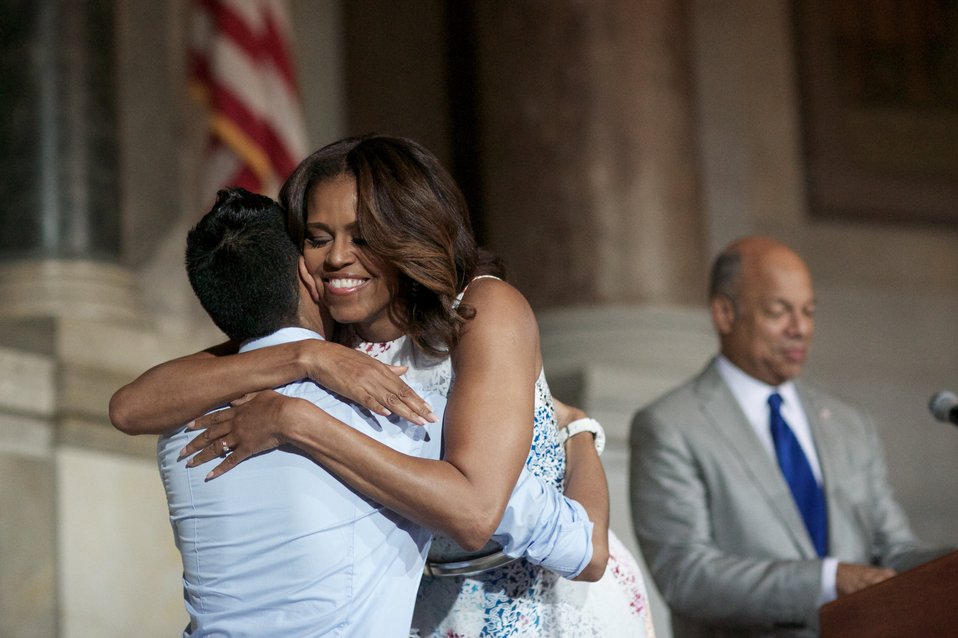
Naturalization Ceremony with Michelle Obama